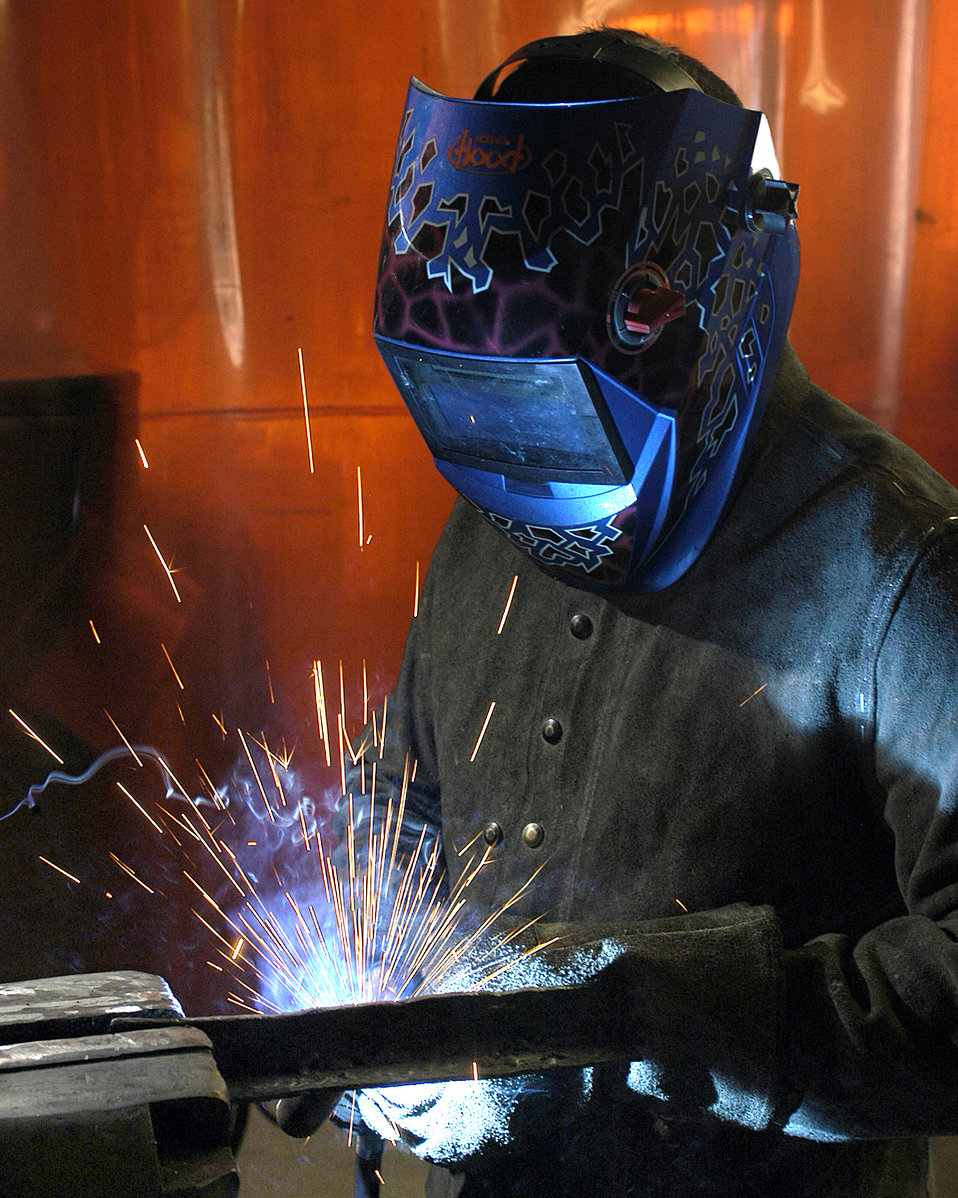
What a spark

NELLIS AIR FORCE BASE, Nev. -- Staff Sergeant Welby Torres welds pieces of metal together to fabricate engine parts here recently. Sergeant Torres is a vehicle management craftsman assigned to the 99th Logistic Readiness Squadron.